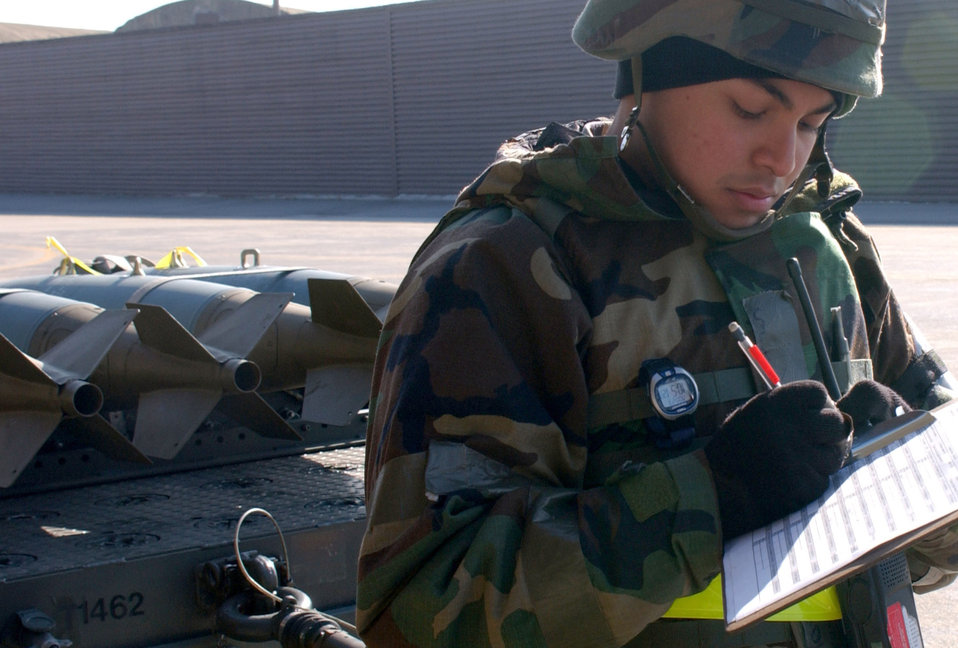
PENCERE ready

OSAN AIR BASE, South Korea (AFPN) -- Senior Airman Josue Mendo inventories practice bombs before they are loaded onto an A-10 Thunderbolt II during an exercise here Jan. 23. The Peninsula Combat Employment Readiness Exercise, or PENCERE, scenarios tested Osan's ability to protect its operations from missile attacks, and the insertion of thousands of enemy special operations forces looking to disrupt operations. Airman Mendo is with the 51st Munitions Squadron.